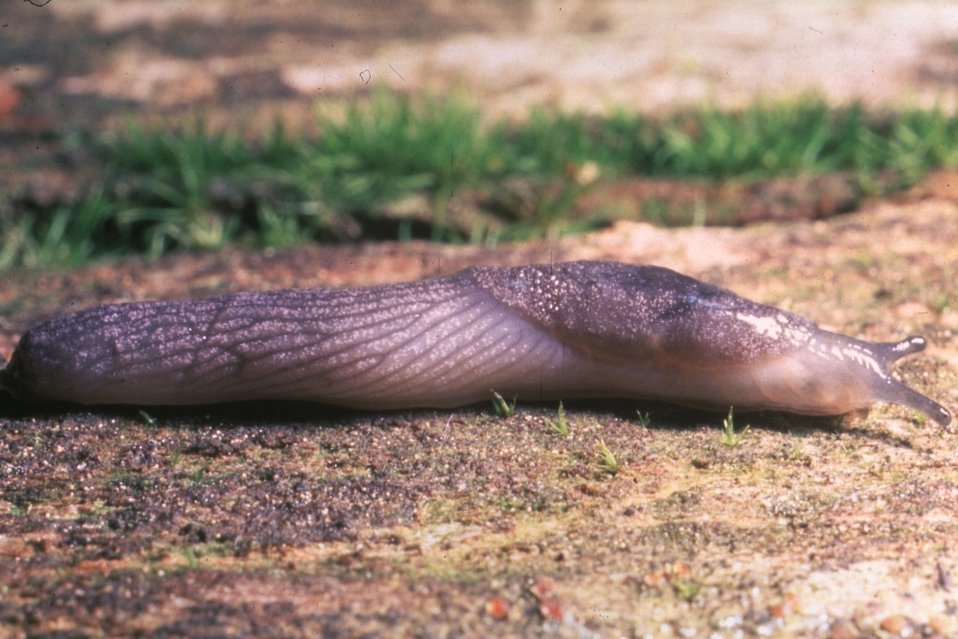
Blue-gray tail-dropper (Prophysaon coeruleum).